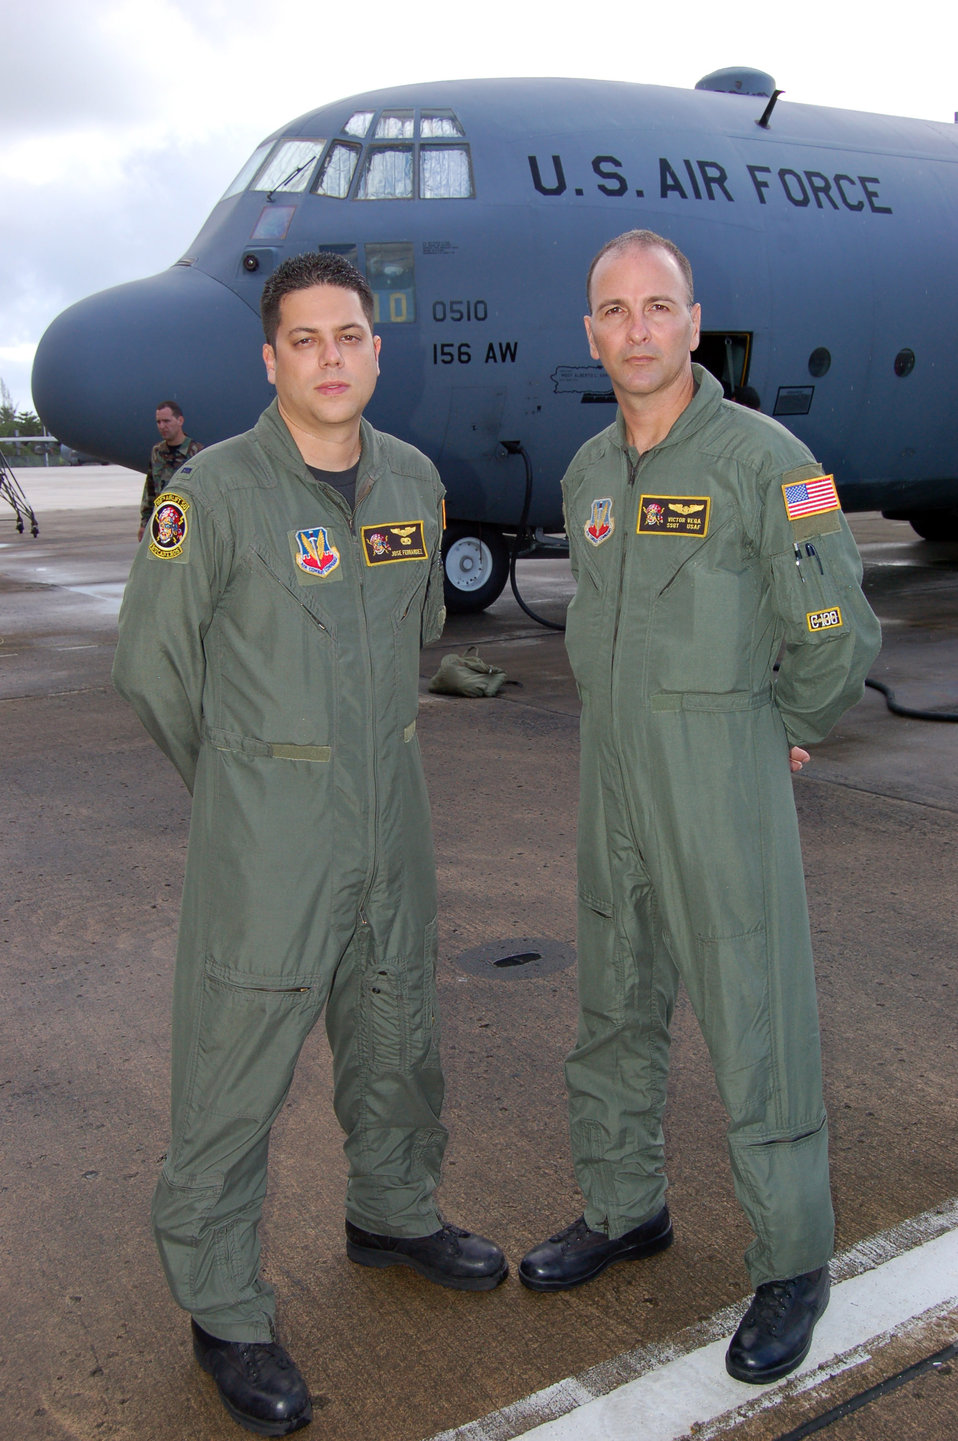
Puerto Rico guardsmen experience combat up close

Pilot First Lt. Jose Fernandez (left) and loadmaster Staff Sgt. Victor Vega stand before their C-130 Hercules at Mu?iz Air National Guard Base, Puerto Rico, Dec. 15. The Airmen had just returned home after a four-country mission to Central and South American and the Caribbean. The two were also among the first members of the 156th Airlift Wing to deploy their cargo planes to Afghanistan.